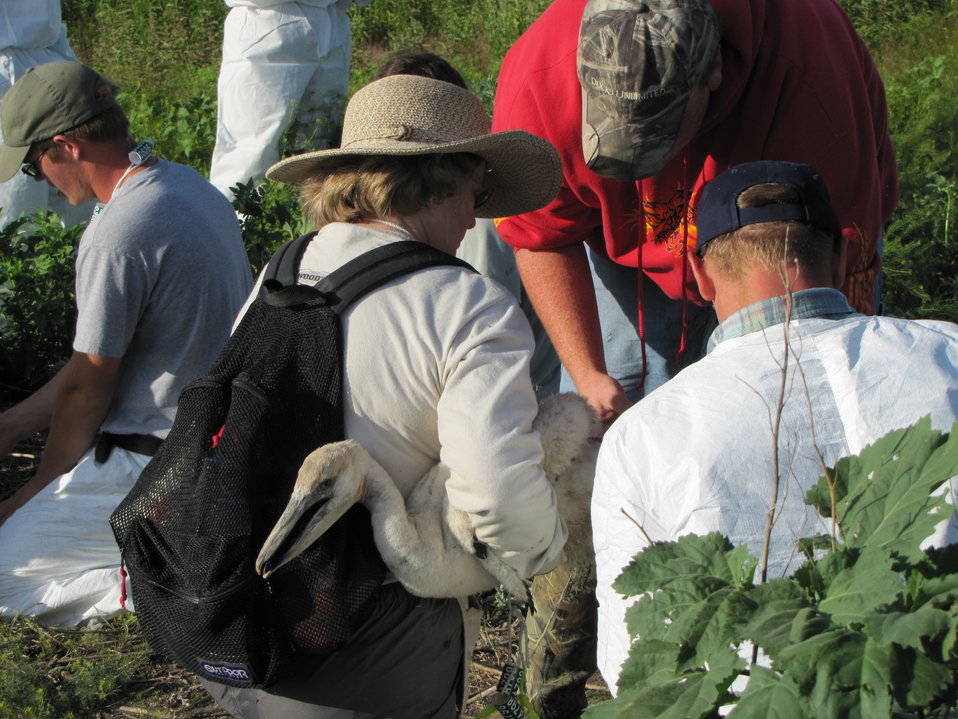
Pelican Banding at Chase Lake NWR

Service staff from the Arrowwood National Wildlife Refuge (NWR) Complex, which includes: Arrowwood NWR, Valley City Water Management District (WMD), and Chase Lake NWR/WMD/PP, along with staff from U.S.Geological Survey Northern Prairie Wildlife Research Center participated in pelican banding.